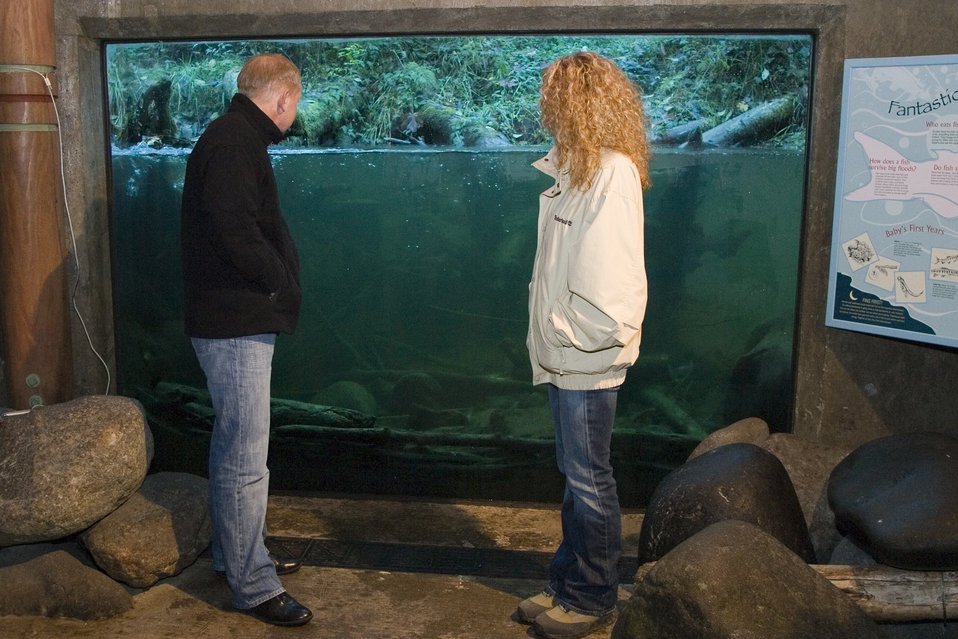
Alexander Chistyakov, Vice-Governor of Kamchatka, Oksana Rudenko Kamchatka Regional Administrator watch fish in BLM's Wildwood Recreation Site fish viewing structure.